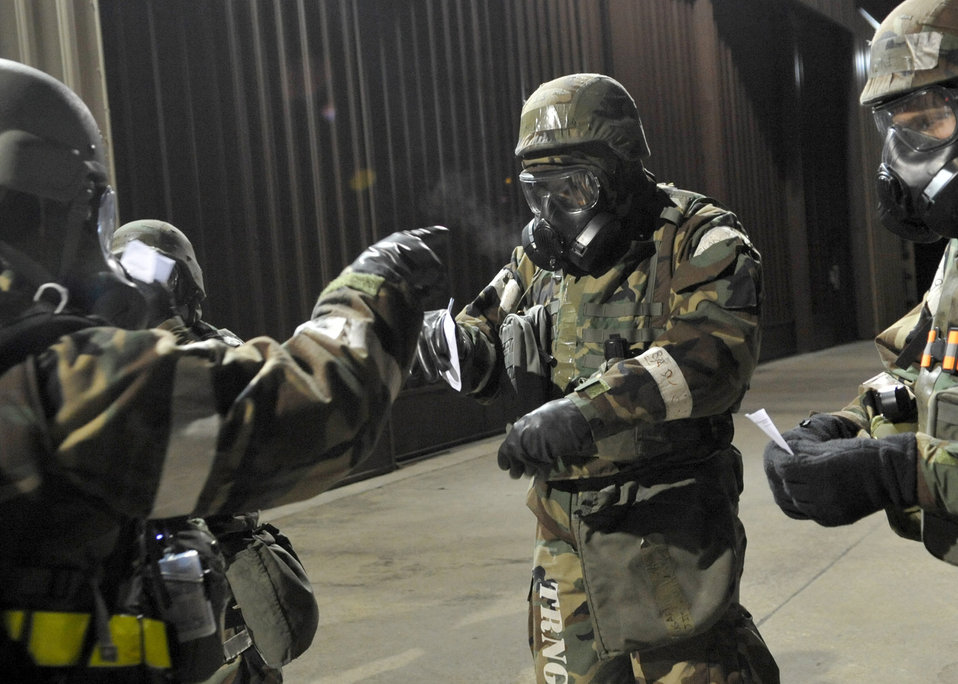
Beverly Bulldog 11-01

Airmen